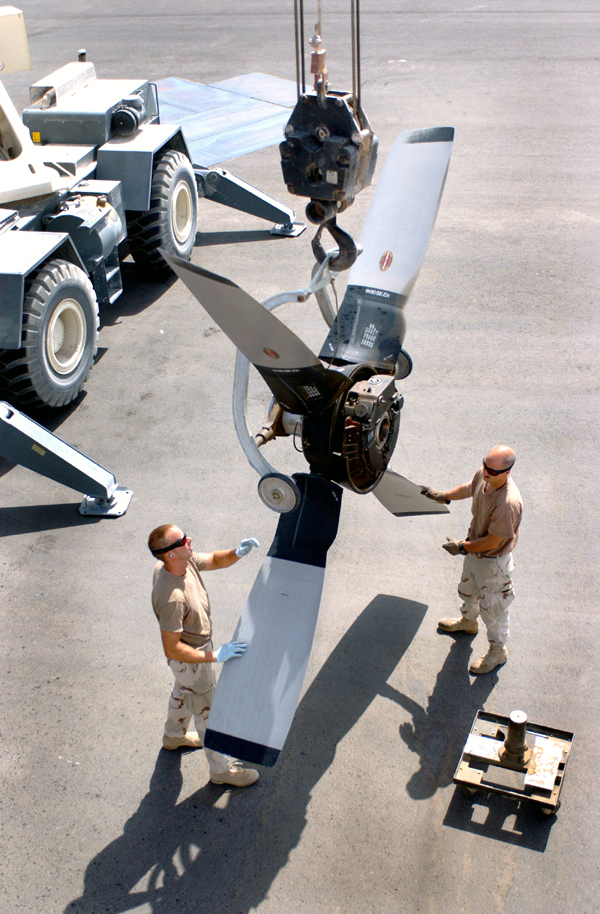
Handle with care

OPERATION IRAQI FREEDOM -- Staff Sgt. Brett Trammell (left) and Tech. Sgt. Clark Taylor prepare a propeller assembly to be mounted on the wheel base for inspection during routine maintenance on a C-130 Hercules. Both airmen are from the Missouri Air National Guard's 139th Airlift Wing and are supporting Operation Iraqi Freedom from a forward-deployed location in Southwest Asia.